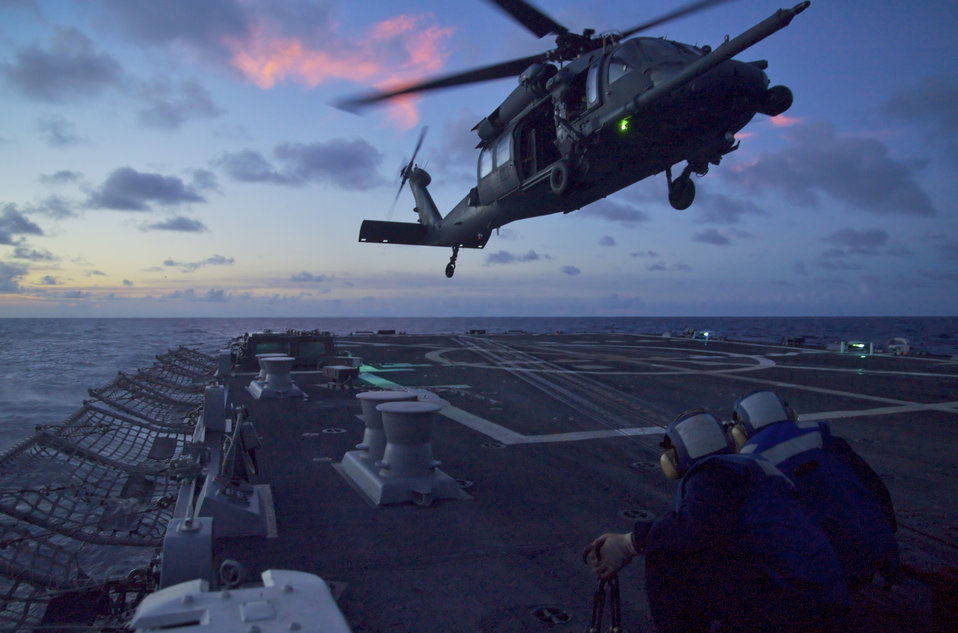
33rd Rescue Squadron wins 2009 Air Force's Verne Orr Award

A 33rd Rescue Squadron aircrew on an HH-60G Pave Hawk helicopter from Kadena Air Base, Japan, took part in a refueling operation exercise with the Navy on the USS John S. McCain practicing take off and landing from the vessel's flight deck while the ship was underway March 4 off the coast of Japan.